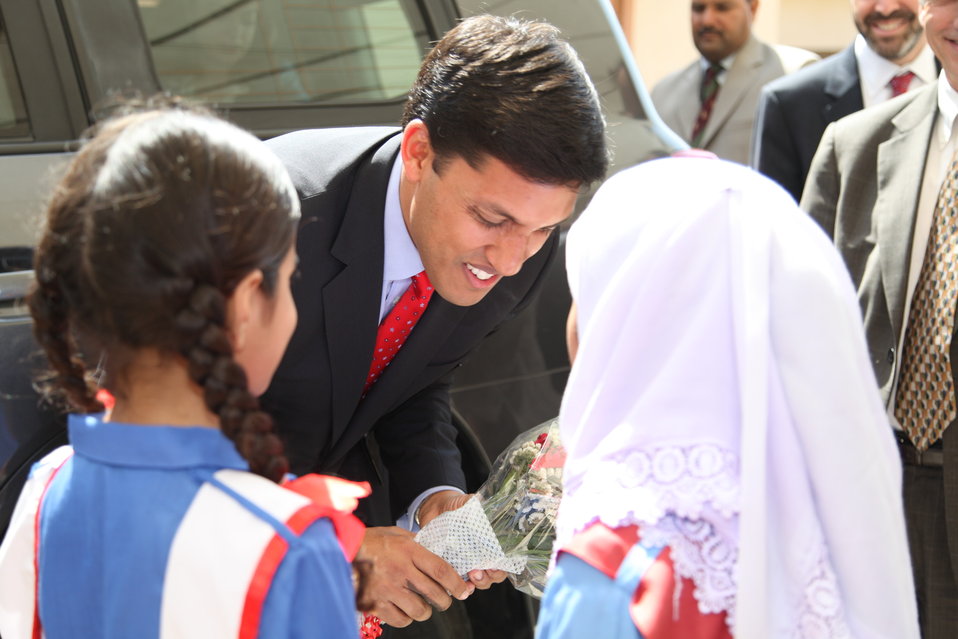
Launch of the USAID National Reading Program in Karachi on April 12, 2012.

Dr. Rajiv Shah receiving the welcome bokay from the childrens.